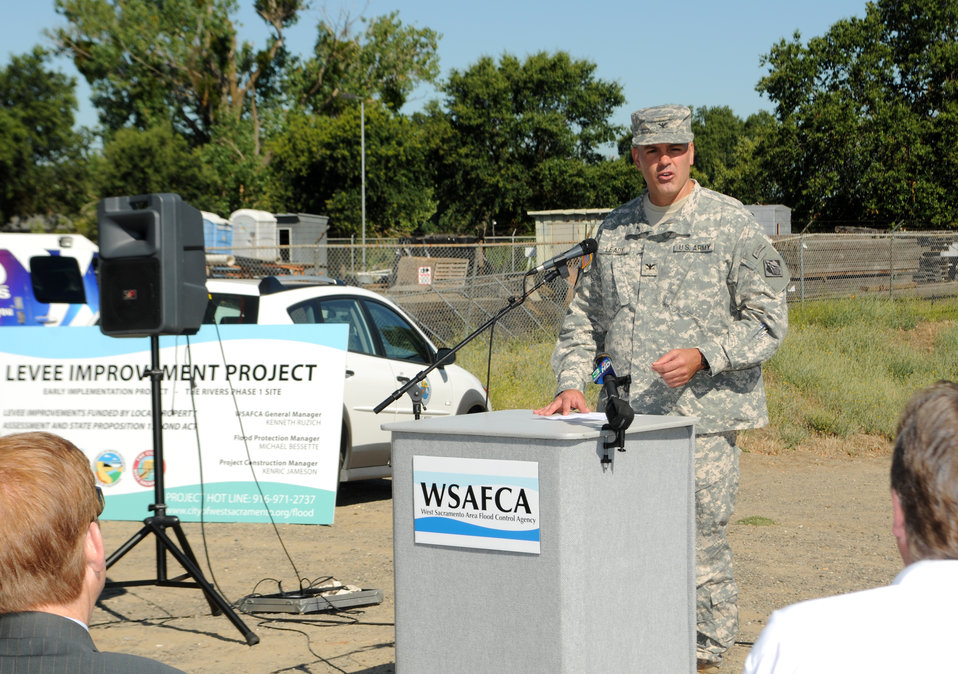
Col. Bill Leady commends WSAFCA

U.S. Army Corps of Engineers Sacramento District commander Col. Bill Leady commended West Sacramento Area Flood Control Agency for being “truly a model partner to work with” during a levee improvement project ground breaking ceremony in West Sacramento, Calif., July 19, 2011. Leady also thanked West Sacramento Mayor Christopher Cabaldon and other city officials for their patience, understanding, and perseverance as the city decides to move forward on the project without federal funding. “I can’t say enough how admirable it is that you all are building this project to such a high standard—without any promise of federal credit for this work,” Leady said. “Your commitment to public safety is commendable.”